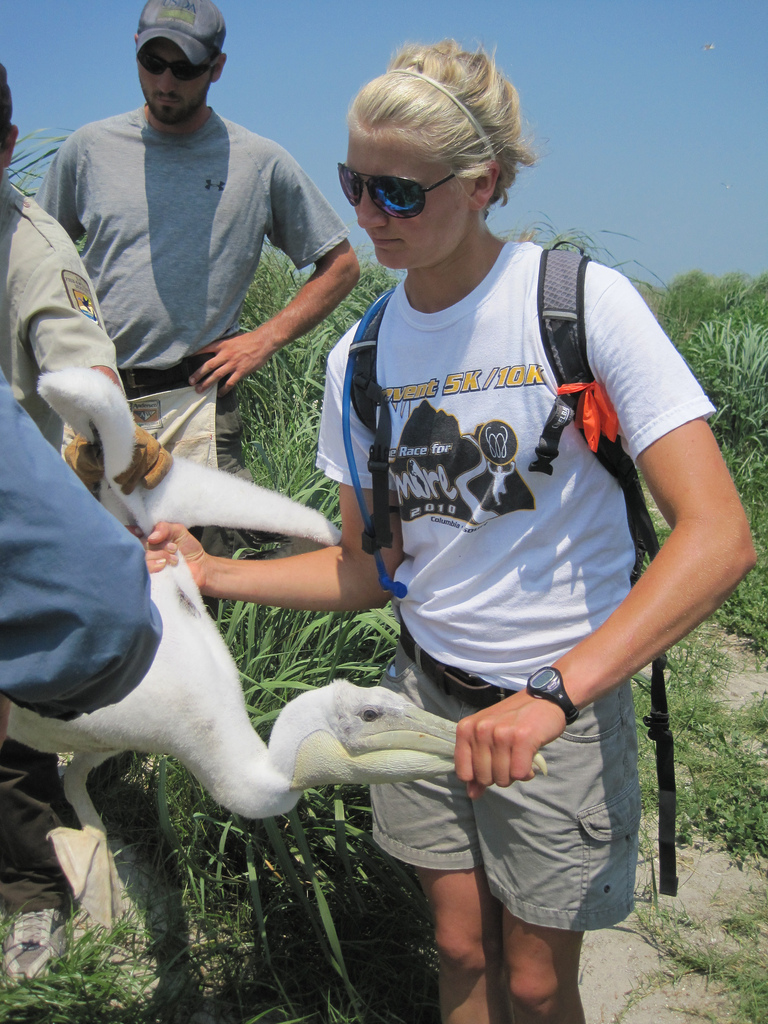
Pelican banding

U.S. Fish and Wildlife Service